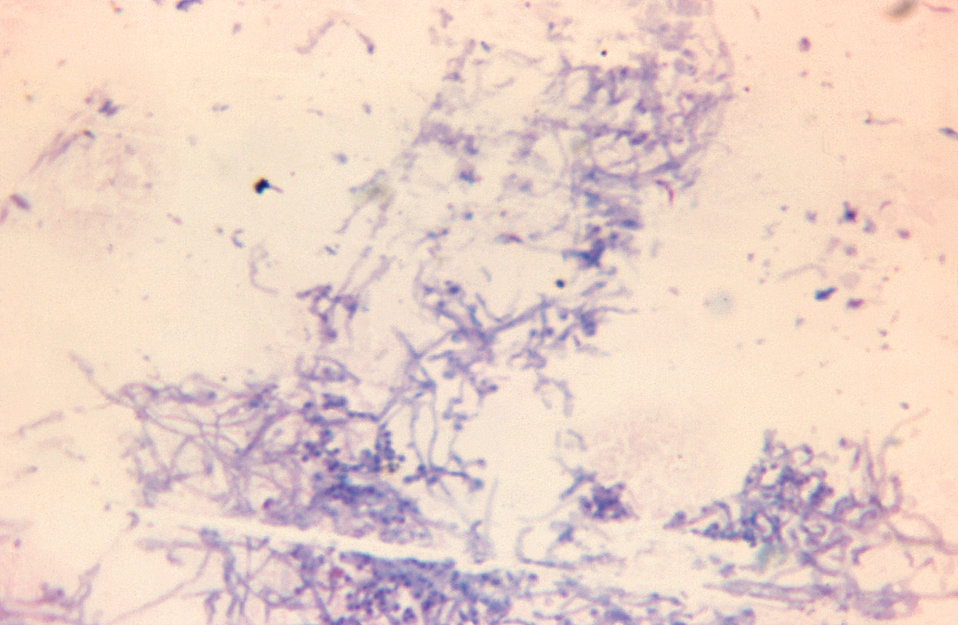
Magnified 1000X, this photomicrograph revealed some of the ultrastructural morphology displayed by the aerobic, Gram-positive bacterium, Micromonospora sp.. This bacterium forms true mycelia that are composed of hyphae from which the reproductive spores arise. Note the many filamentous hyphae present in this micrograph.